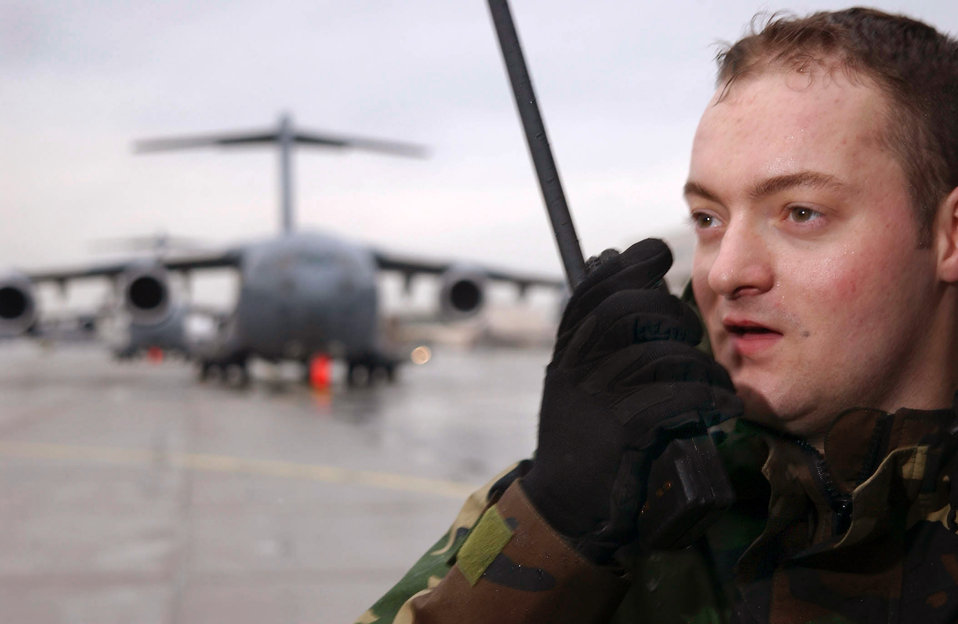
Rhein-Main maintains air bridge to Afghanistan

RHEIN-MAIN AIR BASE, Germany -- Airman 1st Class Nate Hill, a C-17 Globemaster III crew chief, updates the air mobility control center at Rhein-Main Air Base, Germany, on the status of his aircraft. Hill is assigned to the 437th Aircraft Maintenance Squadron at Charleston Air Force Base, S.C. He is currently on temporary duty at Rhein-Main.